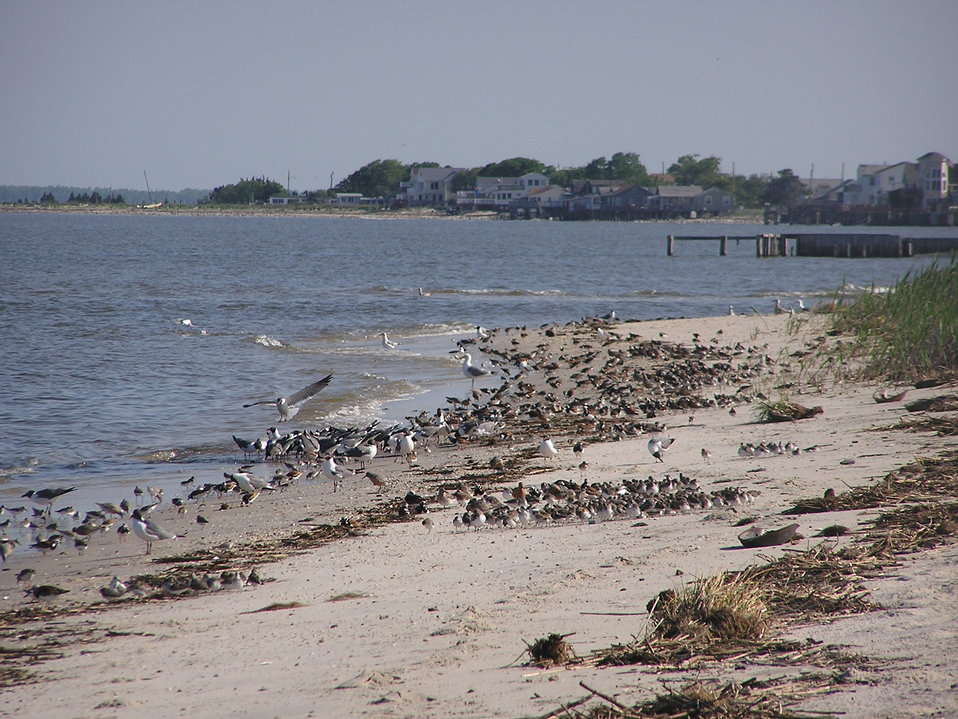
Shorebirds at Cape May National Wildlife Refuge.